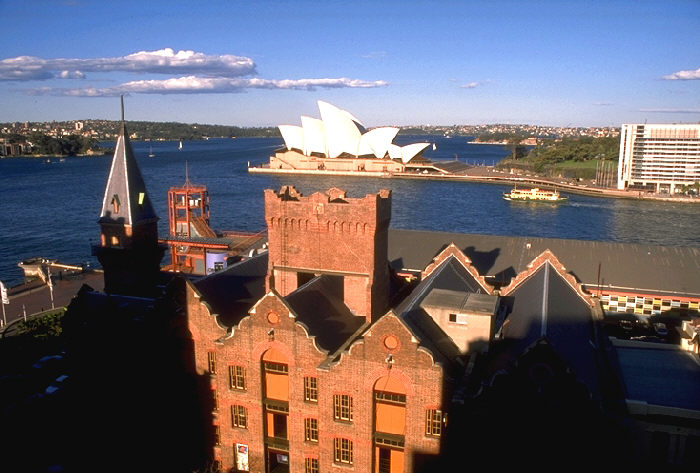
Harbor and Opera House from The Rocks, Sydney, Australia.